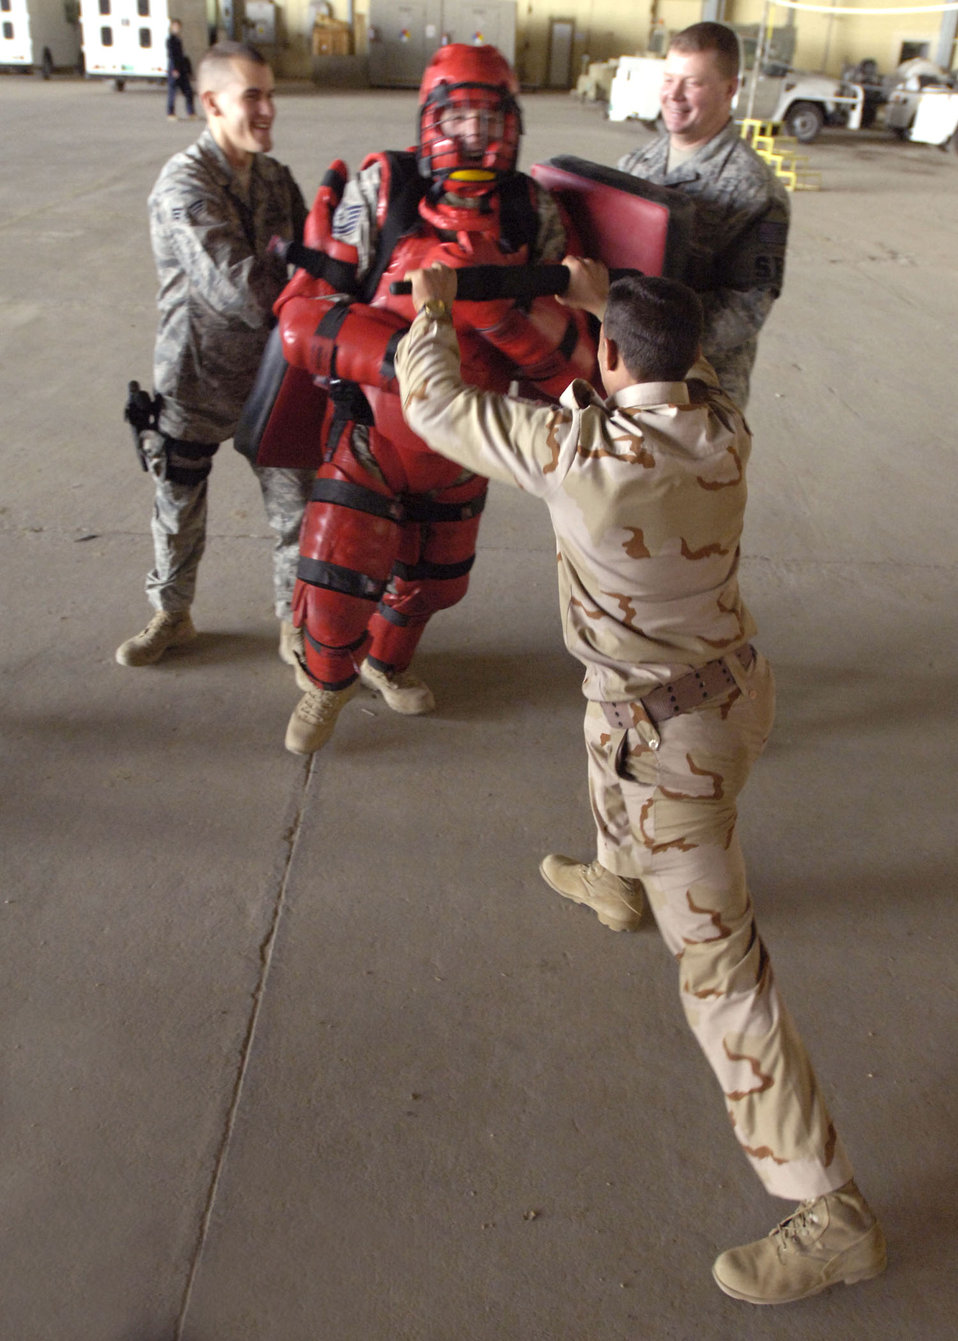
Security forces advisers provide advanced training for Iraqi airmen

Tech. Sgt. Todd Barnett attacks an Iraqi air force airmen Dec. 23, 2010, during a training session. The Red Man suit helped provide a physical assault, but prevented any serious injuries during the training. Sergeant Barnett is a New Al-Muthana Air Base Transition Team member.